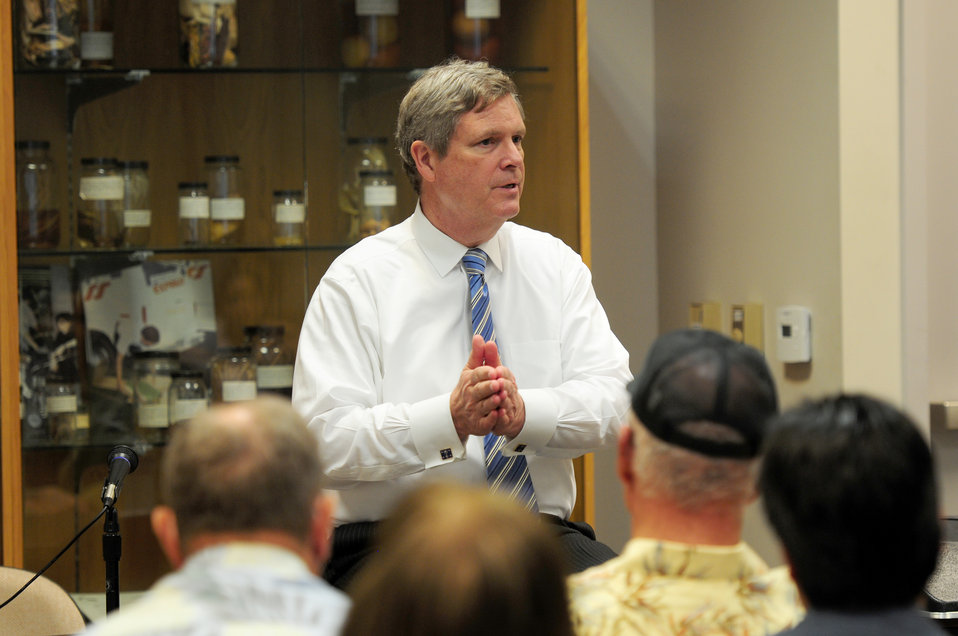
Agriculture Secretary Tom Vilsack speaks at a stakeholder meeting held at the State of Hawaii, Department of Agriculture Plant Quarantine Building in Honolulu, Hawaii, on Tuesday, January 10, 2012, to discuss USDA programs, agricultural challenges in Hawaii, and alternative energy.